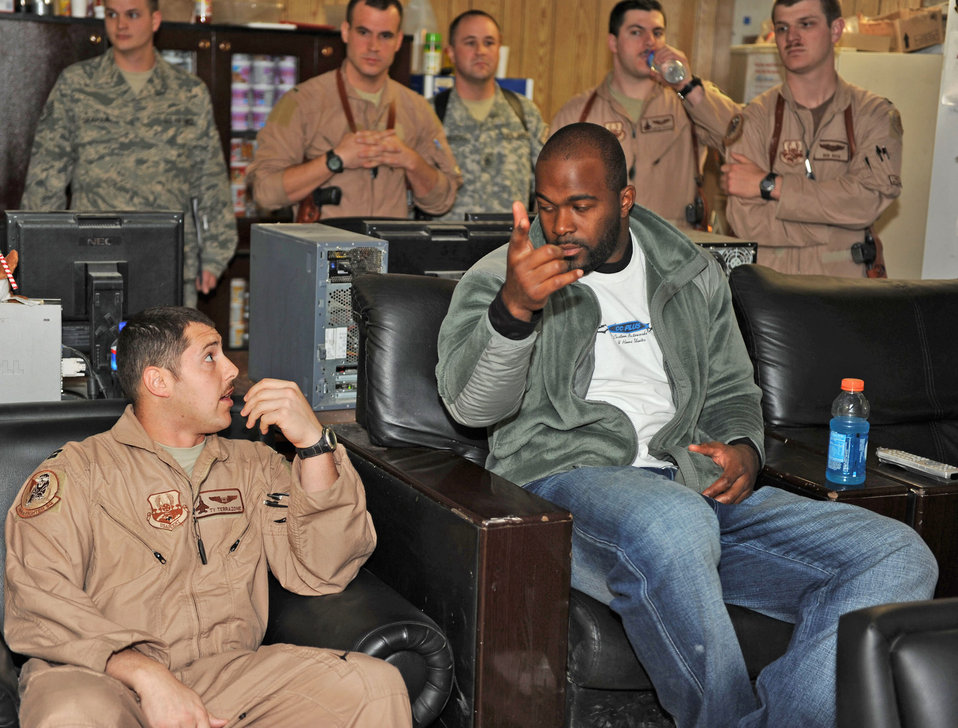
NFL players visit Bagram Airmen

Capt. Tyler Terrazone and Mario Williams of the Houston Texans discuss weapons systems operations during a National Football League players visit March 5, 2010, to Bagram Airfield, Afghanistan. Captain Terrazone is an F-15E Strike Eagle weapons system officer assigned to the 494th Expeditionary Fighter Squadron.